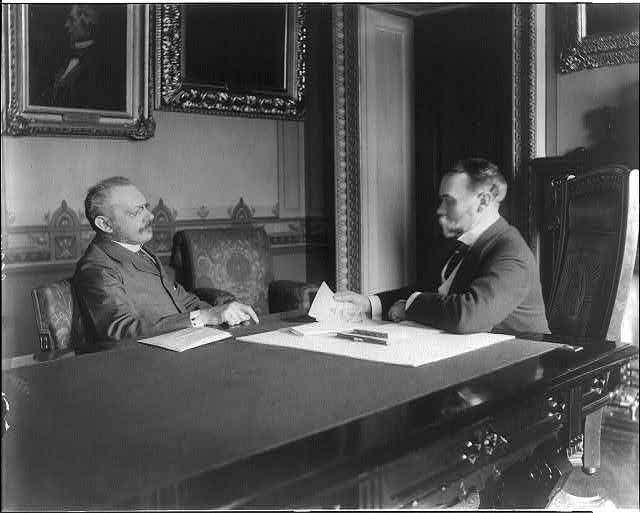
Secretary Hay meeting with Cambron

Secretary of State John Milton Hay negotiating the exchange of 20 million dollars for the Philippine Islands with Jules Martin Cambron of Spain. 5/4/1899